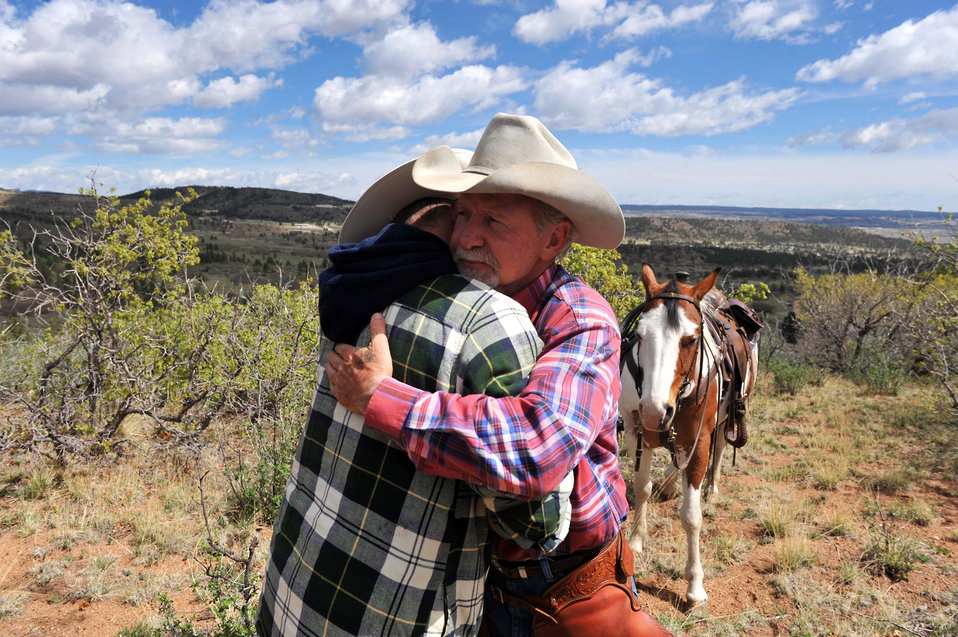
Warrior Wellness Program

U.S. Army Sgt. Dale Chick (left) is hugged by Andy Popejoy after Chick talked about his experiences in Iraq at the equestrian center April 26, 2012, at the U.S. Air Force Academy in Colorado Springs, Colo. Chick said volunteering at the stables and working with horses helps him find inner peace and comfort after being deployed in Iraq and Afghanistan. Popejoy is an animal caretaker at the center.